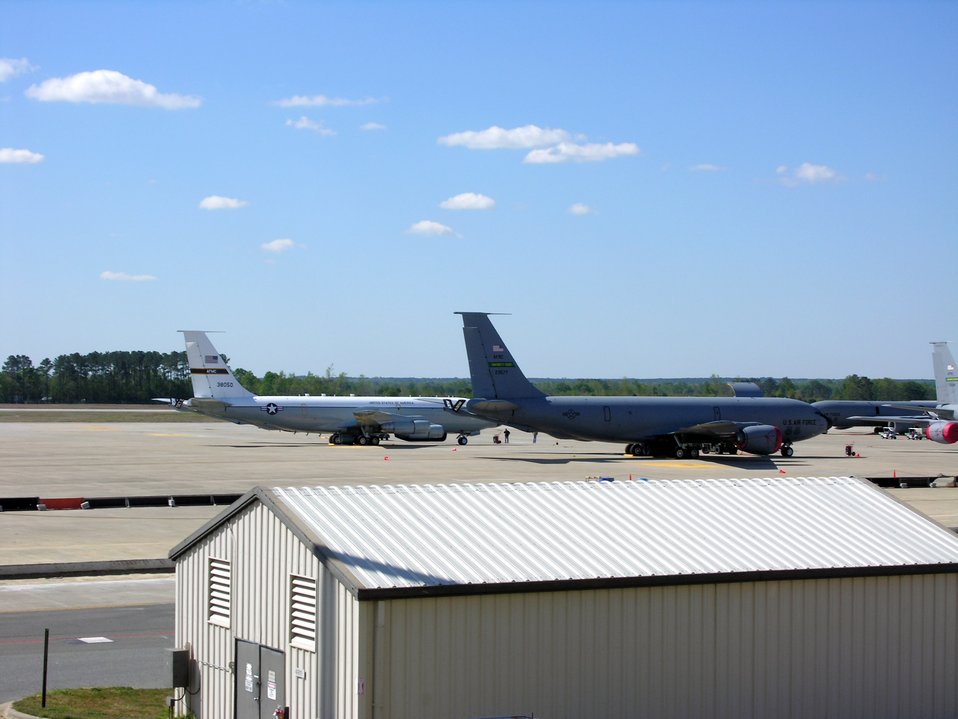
Reserve unit scrambles to guide troubled aircraft to safe landing

An NKC-135 aircraft from Kirtland Air Force Base, N.M., (left) shares ramp space with 916th Air Refueling Wing aircraft after safely landing following an in-flight emergency on April 17. The Air Force Reserve Command's 916th ARW, Air Force Reserve, helped the damaged aircraft land safely after launching a KC-135R Stratotanker to fly on its wing, assisting it in a visual landing.